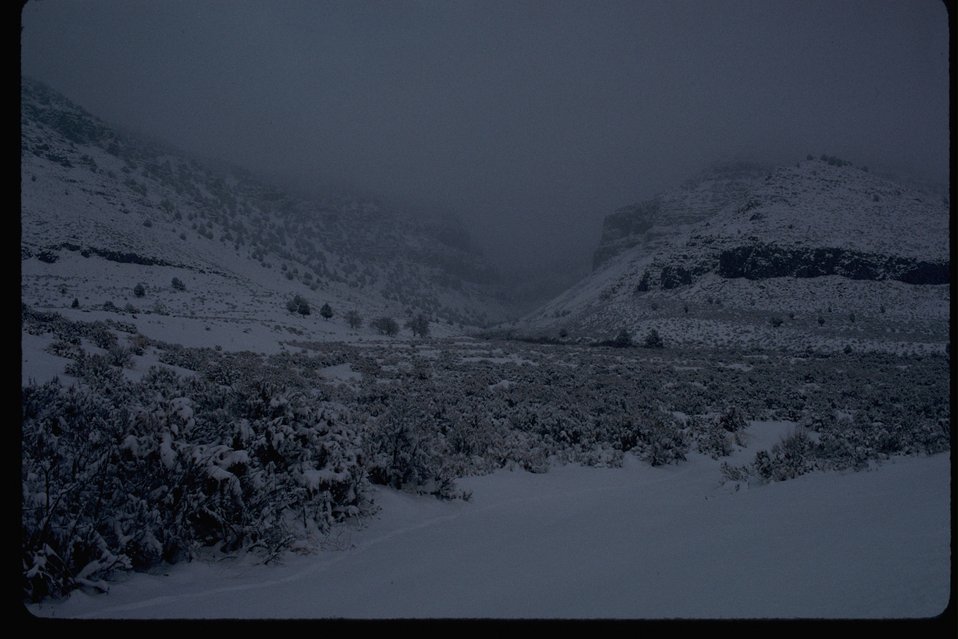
Winter along county road in Catlow Valley looking up Home Creek Canyon in the Steens.